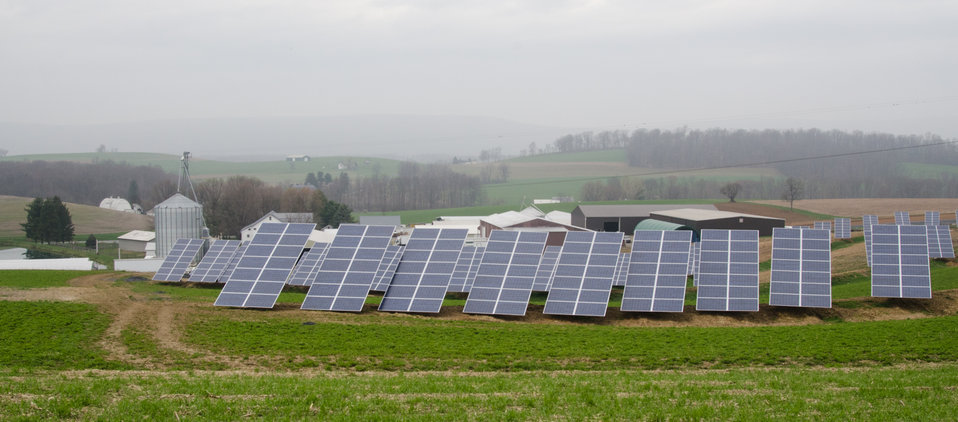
Heidel Hollow Farms, on Wednesday, April 20, 2011, has been a family owned farm since 1852 and is currently an 1,800 acre operation in Germansville, PA. Led by David Fink, President of Heidel Hollow Farms, they mainly produce and compact hay for exportand grow produce on 300 acres for local. With the financial help of the U.S. Department of Agriculture (USDA) an 896 panel solar array was recently installed on non farmable diversion ditches. Rated at 200 kilowatts, they project 240 megawatts of electricity to be produced each year, providing up to 70% of the farms electrical needs. Additionally, USDA financial assistance made it possible to replace the hay compactor’s diesel engines with clean low-maintenance, low operating cost electric motors to power the compactor's hydraulic system. The compactor increases the density of baled hay by two and half times for more efficient shipping to overseas customers.